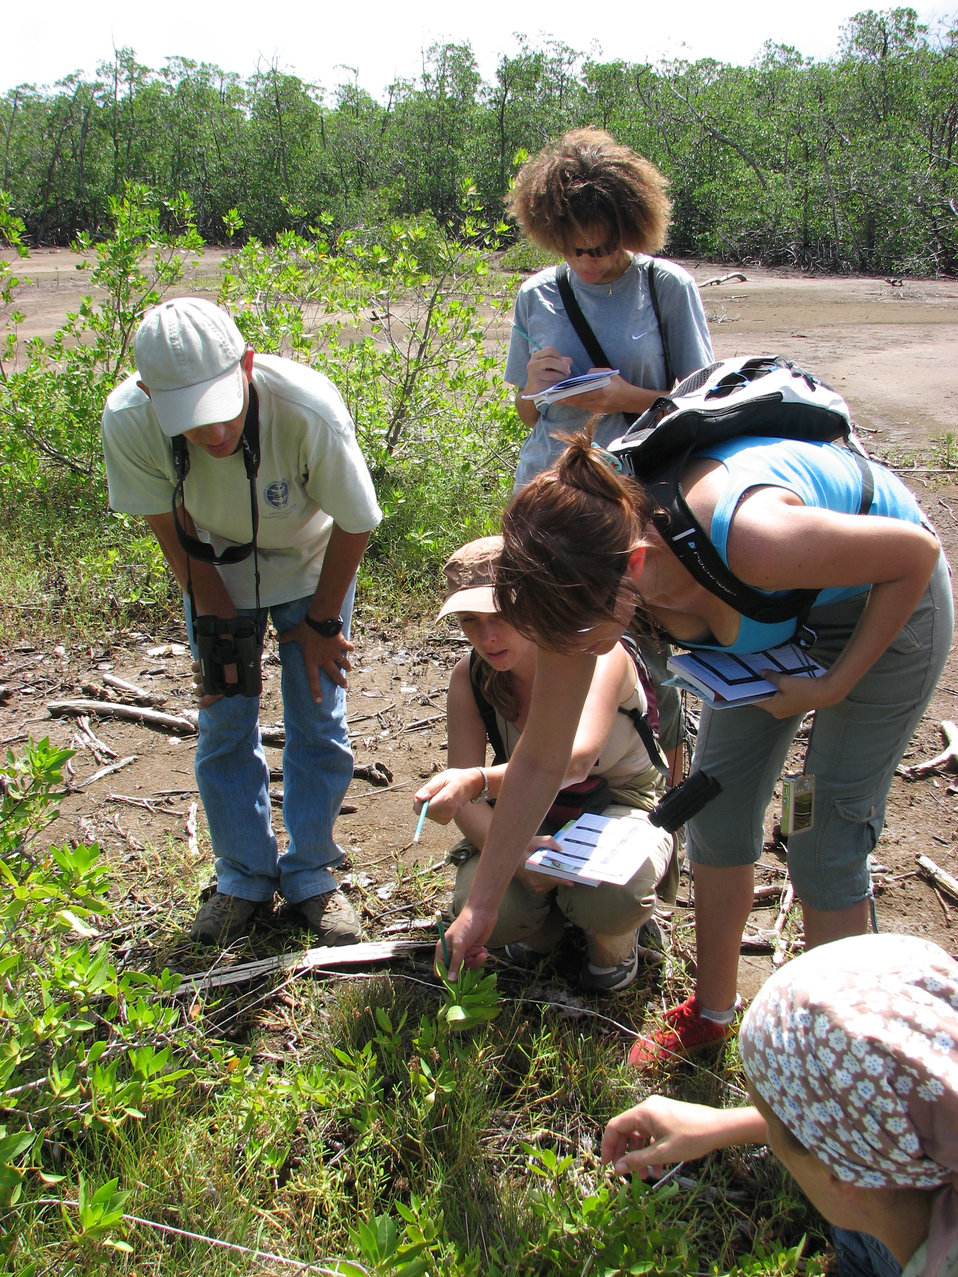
Plant study - quadrats and line transects

SCSCB conservationists study vegetation using quadrats and line transects.